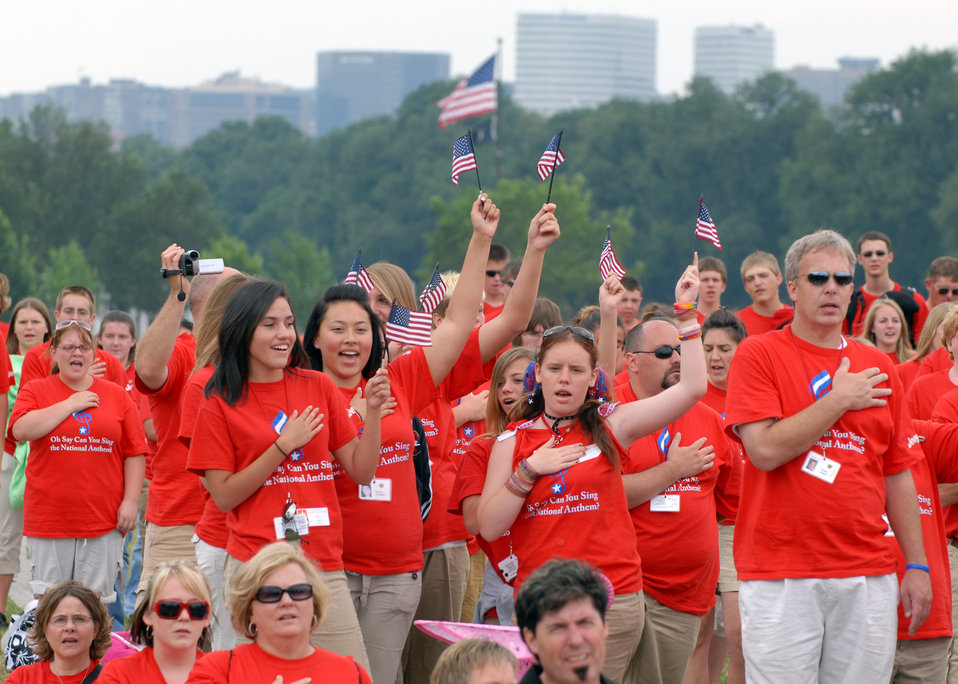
National Anthem Project concludes

Thousands of school children from across the country gather in front of the Washington Monument June 14 to participate in the National Association for Music Education's National Anthem Project grand finale in honor of Flag Day. The project is a multiyear effort to re-teach Americans